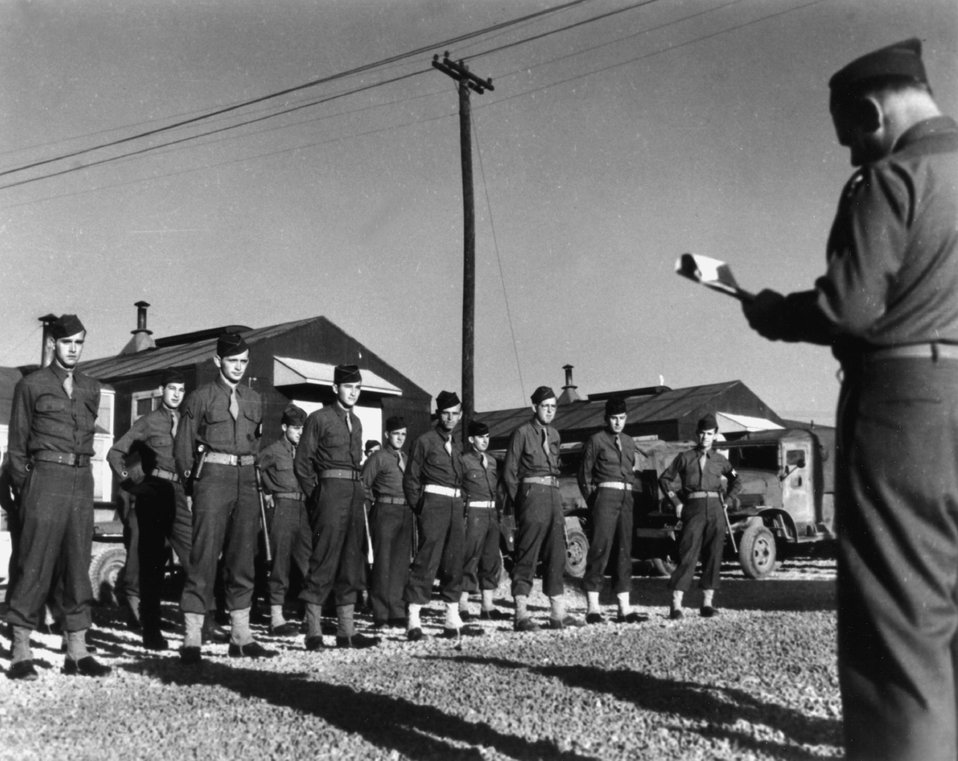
M.P. Detatchment. c. 1945